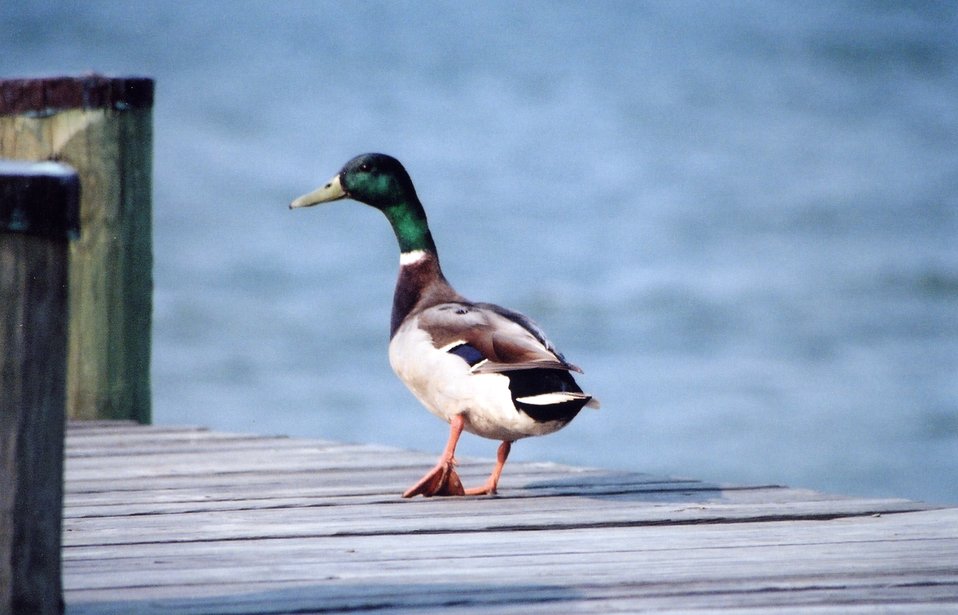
Mallard duck on a pier.